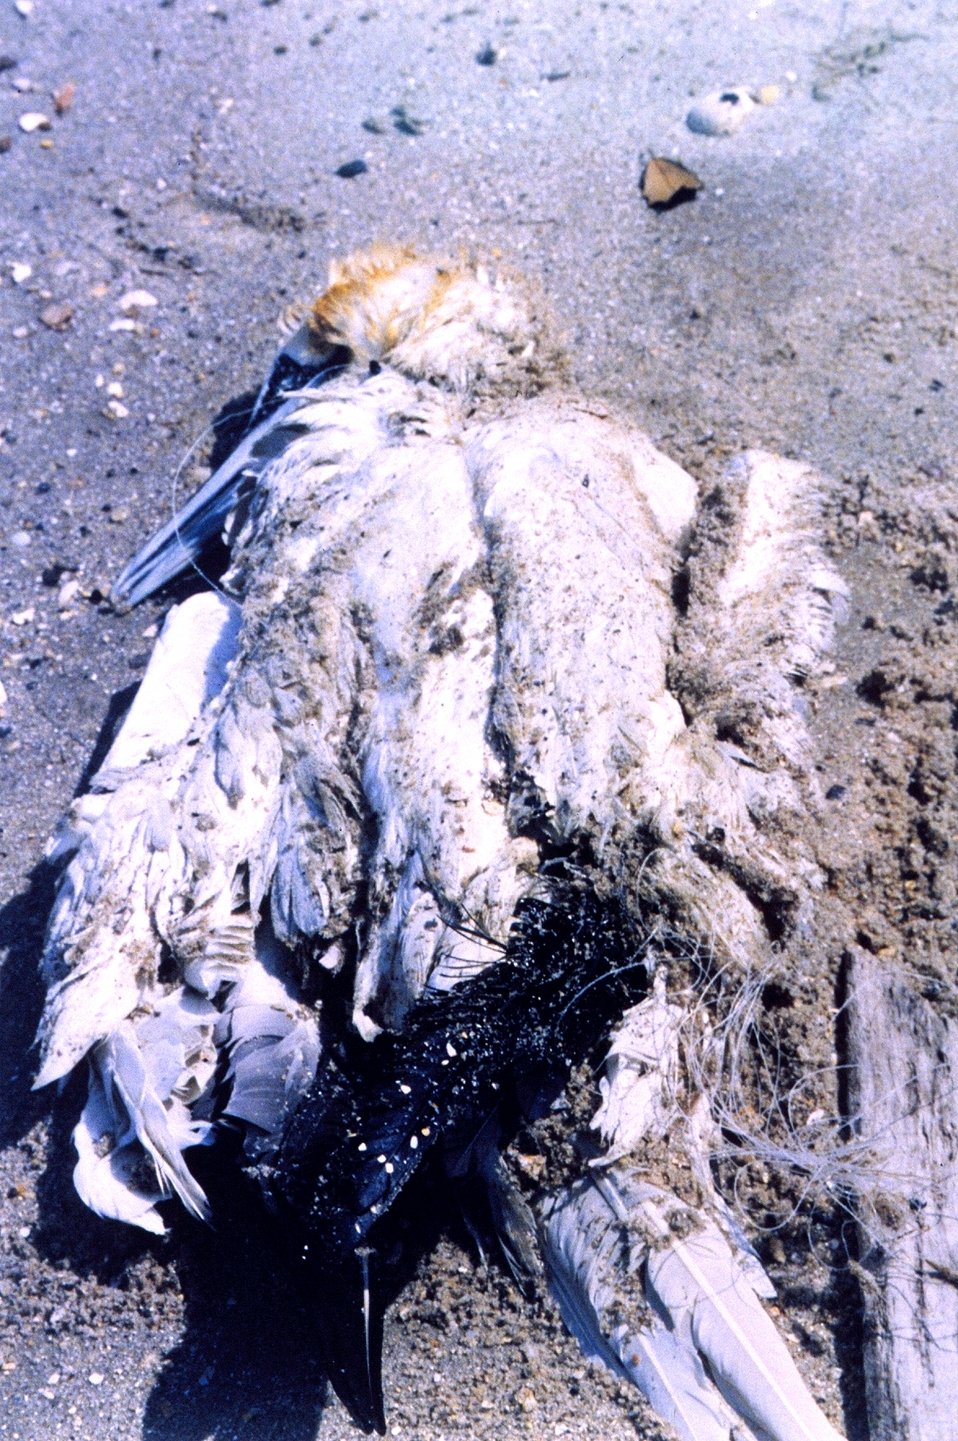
A Northern Gannet, somewhat north of its normal range, tangled in fishing line and drowned.